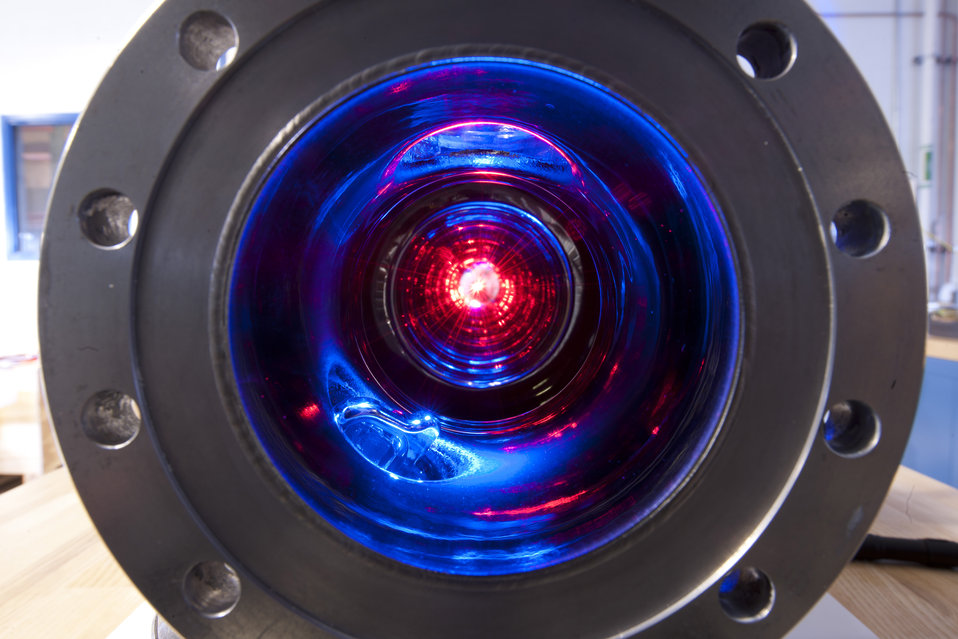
ILC 1.3 GHZ 9 cell cavities at IB4 at Fermi National Accelerator Facility.